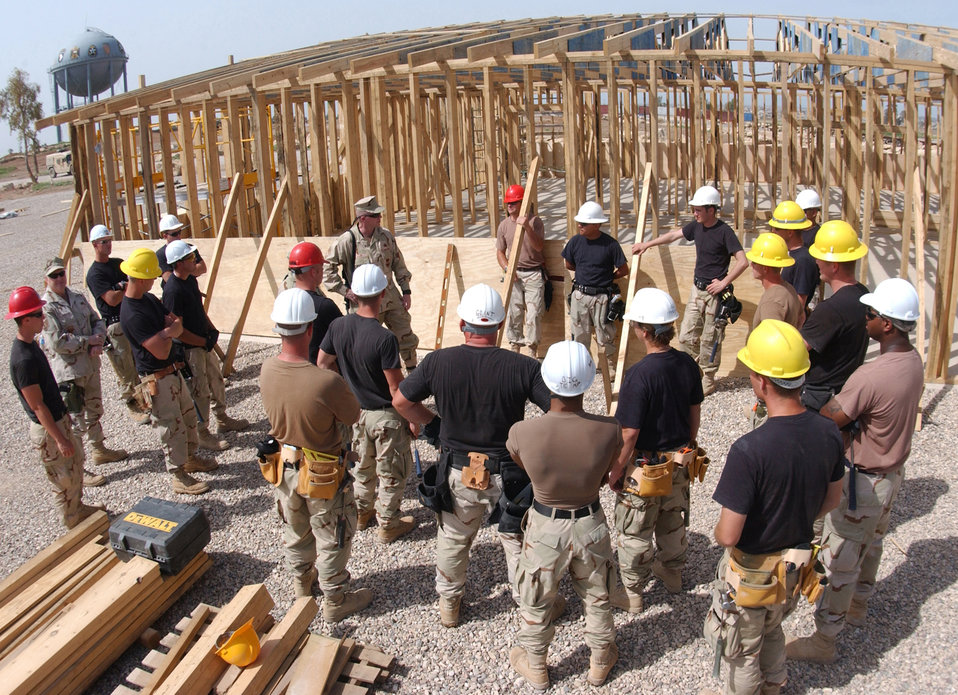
Airmen improve base for Soldiers in northern Iraq

Chief Master Sgt. Layton Clark speaks with a structures team while they take a break from working on a 7,200-square-foot building for the U.S. State Department at Forward Operating Base Marez, Iraq, on Wednesday, April 26, 2006. Chief Clark is the 332nd Air Expeditionary Wing command chief.